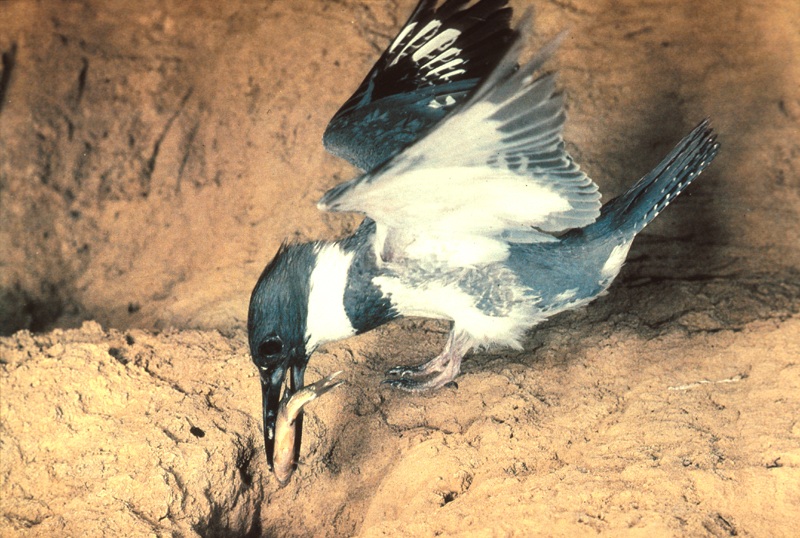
Belted Kingfisher Lower Salmon River Cottonwood Field Office UCSC Upper Columbia-Salmon Clearwater District